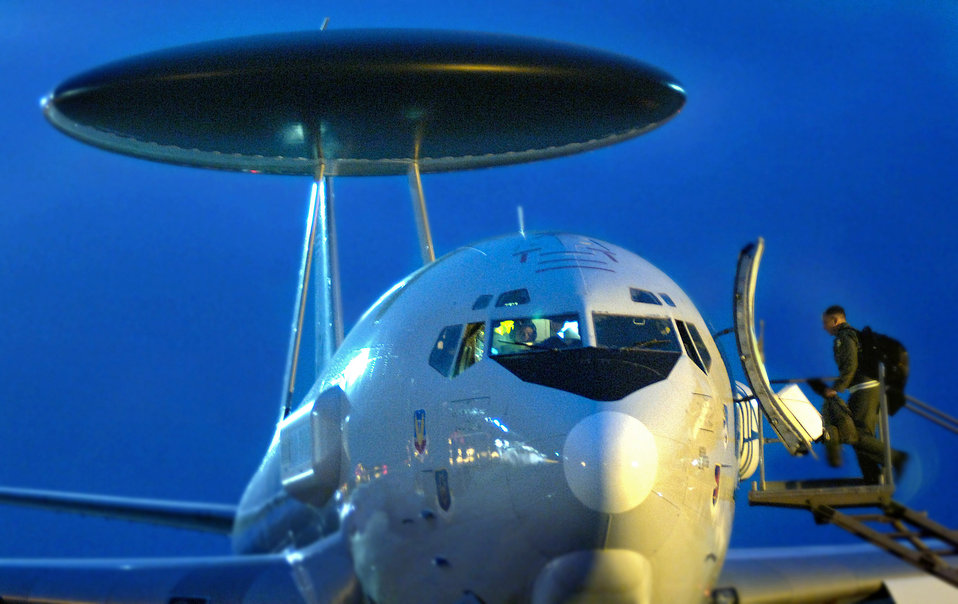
Manta Airmen continue their counterdrug war

An E-3 Sentry airborne warning and control system aircrew member boards the surveillance aircraft before a mission over the eastern Pacific Ocean Aug. 1. The aircraft, whose mission is to search of illegal drug runners, found five possible targets during the mission.